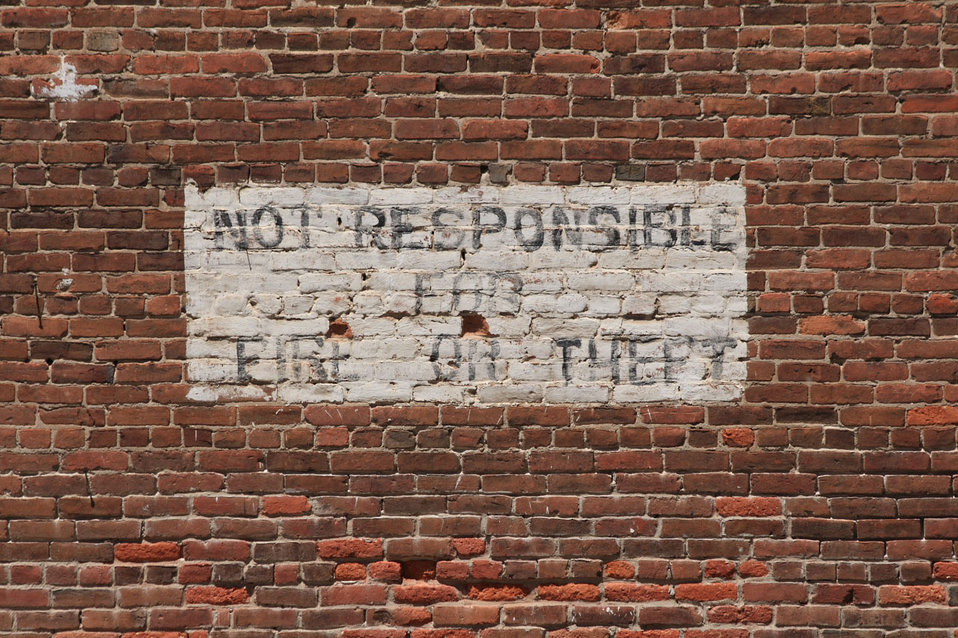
Brick wall with painted sign

Old red brick wall with painted sign stating "not responsible for fire or theft".